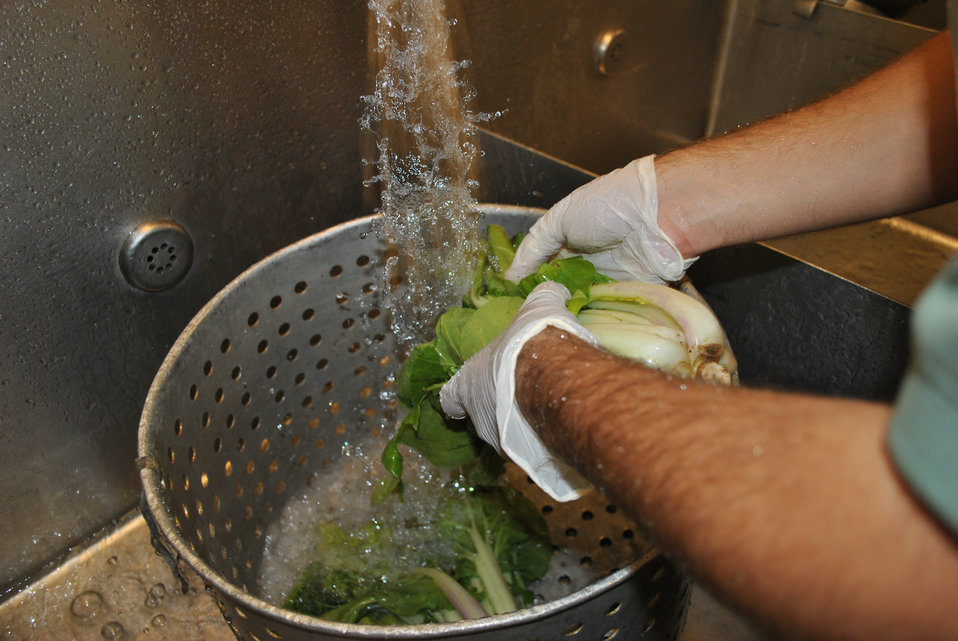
Soil and other debris are washed off bok choy (also known as Chinese chard) grown in the USDA headquarters Peoples Garden. The edible portions of bok choy are the shiny, dark green leaves and the thick, chalk-white stalks. The leaves once chopped will be part of the filling for bean burritos at the DC Central Kitchen.